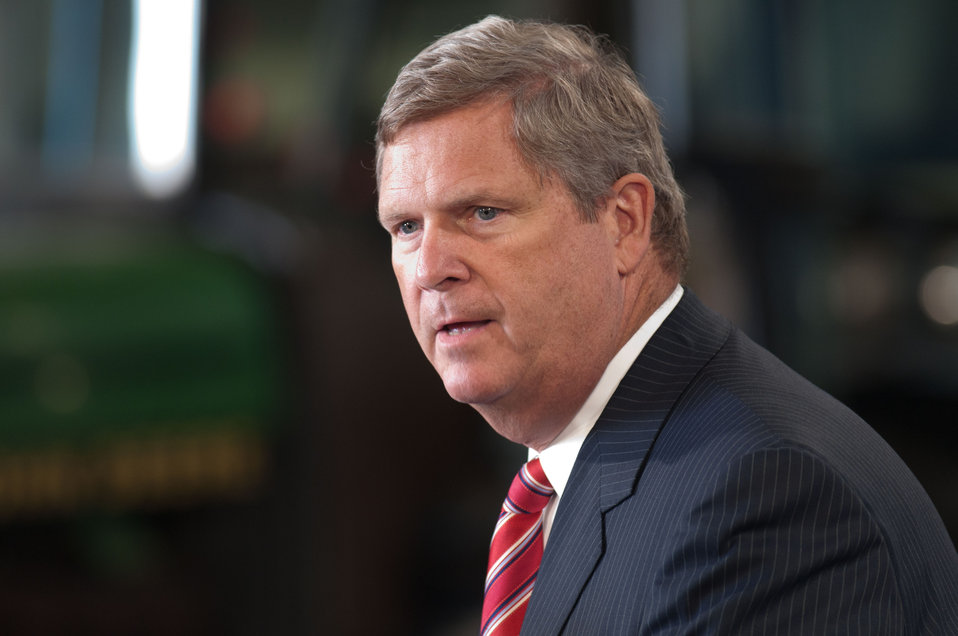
Agriculture Secretary Tom Vilsack introduces President Barack Obama at the Northeast Iowa Community College, for a White House Rural Economic Forum on Tuesday, August 16, 2011. The President’s visit would focus on agriculture’s contribution to the national economy, and how to create more jobs in rural America.